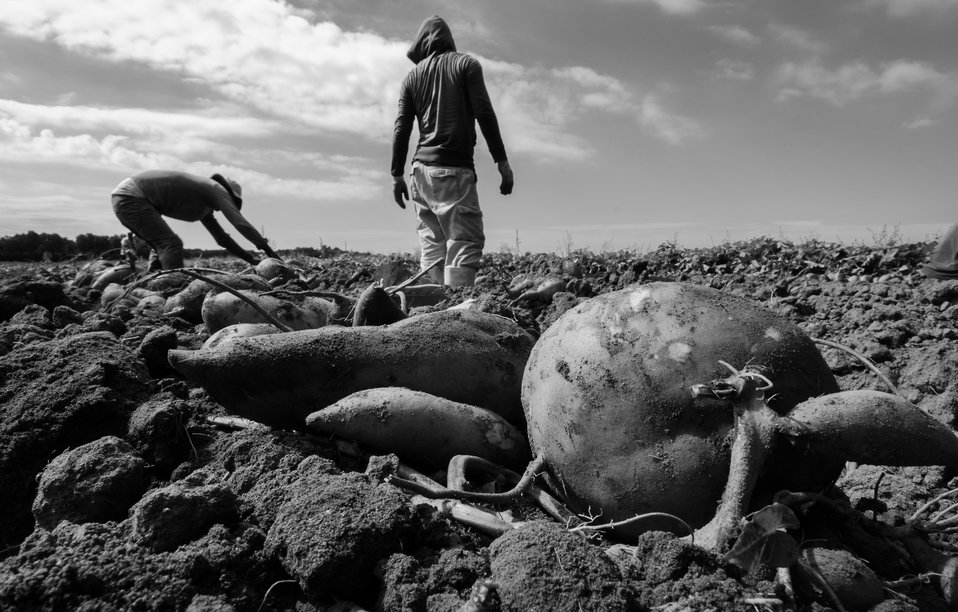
Harvested hand picked large sweet potatoes, at Kirby Farms in Mechanicsville, VA on Friday, Sept. 20, 2013. 200 acres of the farm are devoted to eggplant, spinach, beets, tomato, jalapeno peppers, melons and a variety of greens. Soybeans and small grain are grown on the remaining 300 acres. Using rotational crop practices allows Kirby Farms to double and triple crop yields. Wholesalers, who buy from this farm, sell the produce to major supermarkets in the Mid-Atlantic region, from North Carolina to Maryland. Restaurants in the local area prepare and serve the local bought produce to patrons in the Richmond, VA metropolitan area.